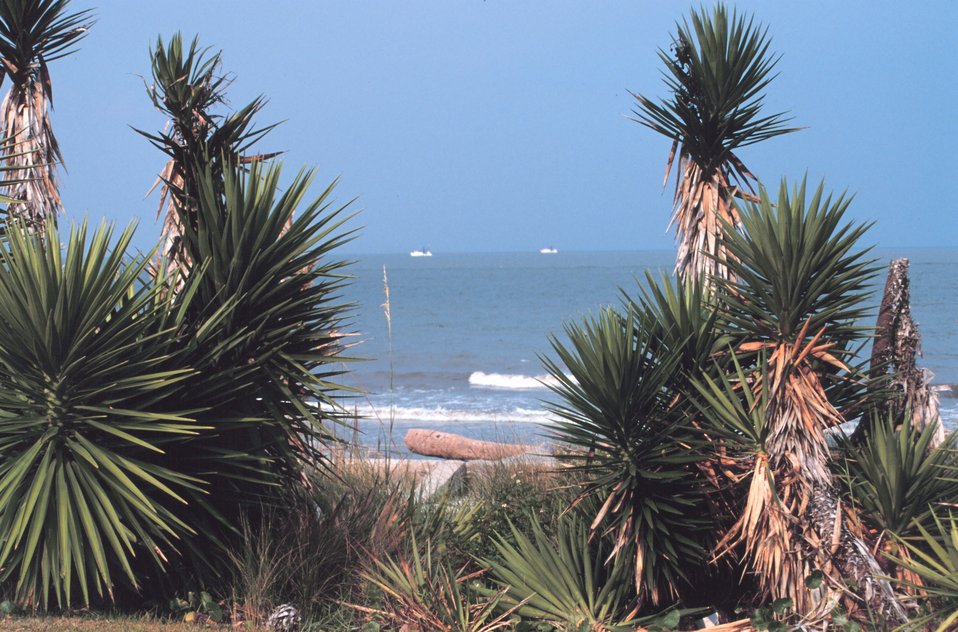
Palmetto trees (Sabal palmetto) along the Atlantic Ocean